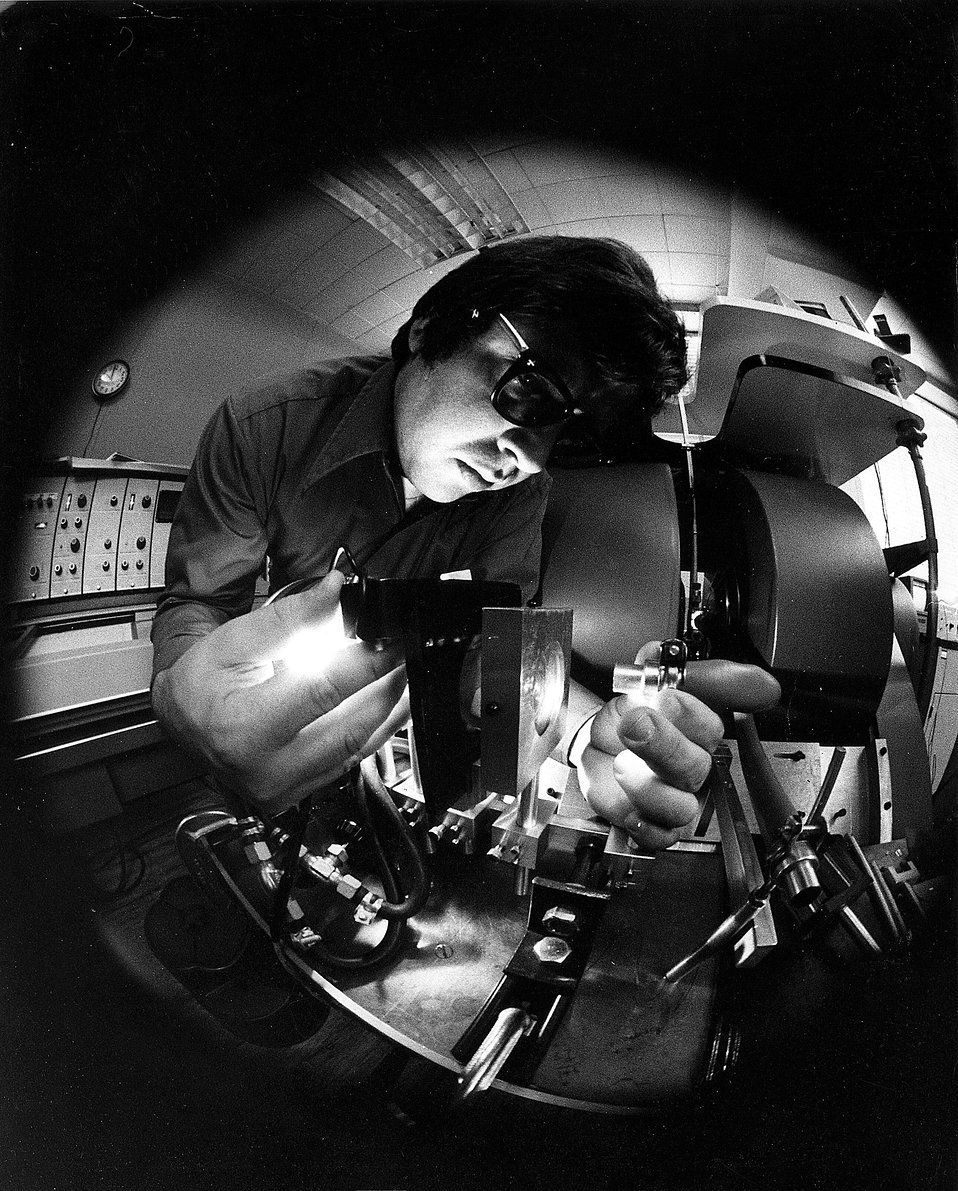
An electron spin resonance spectrometer...used in basic biological studies at Argonne.
c.1972